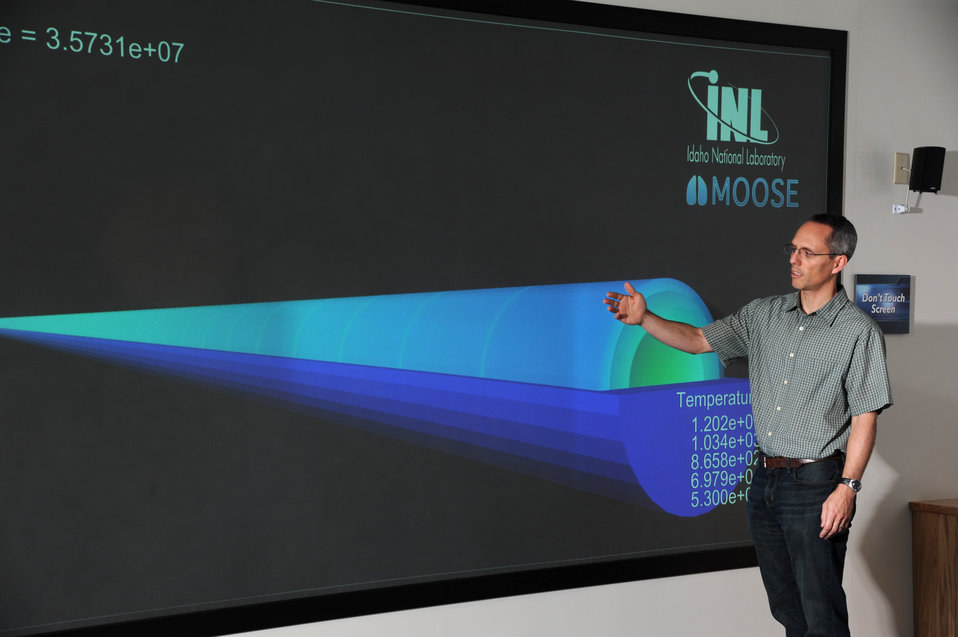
The BISON, nuclear fuel simulation tools runs on Idaho National Laboratory's Multiphysics Object Oriented Simulation Environment (MOOSE) simulation platform and enables high-fidelity, coupled analysis of nuclear fuel scenarios that are beyond the reach of traditional tools.